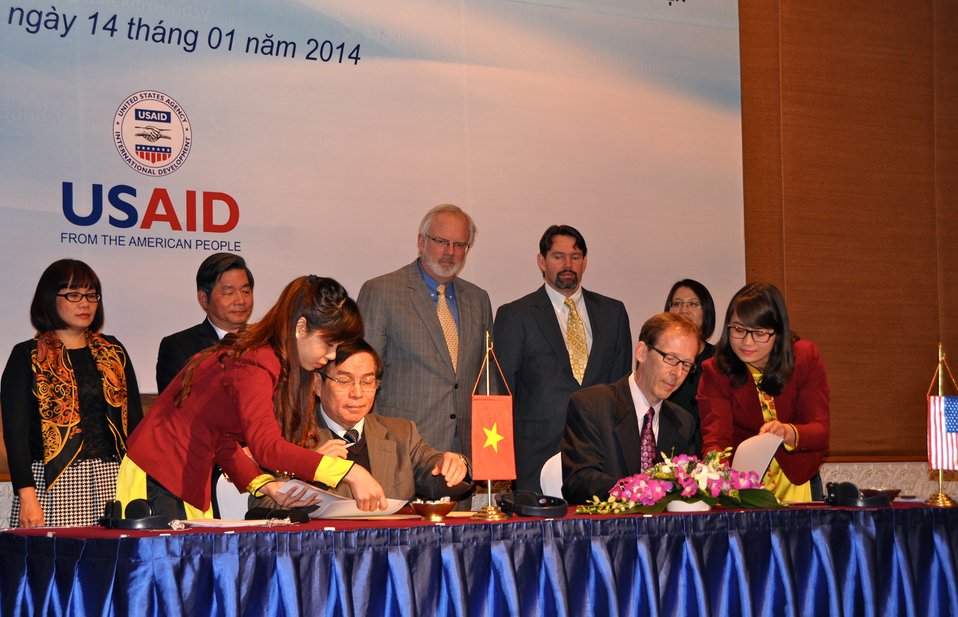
USAID and Vietnam’ Ministry of Justice sign an MoU to begin USAID’s new Governance for Inclusive Growth program.